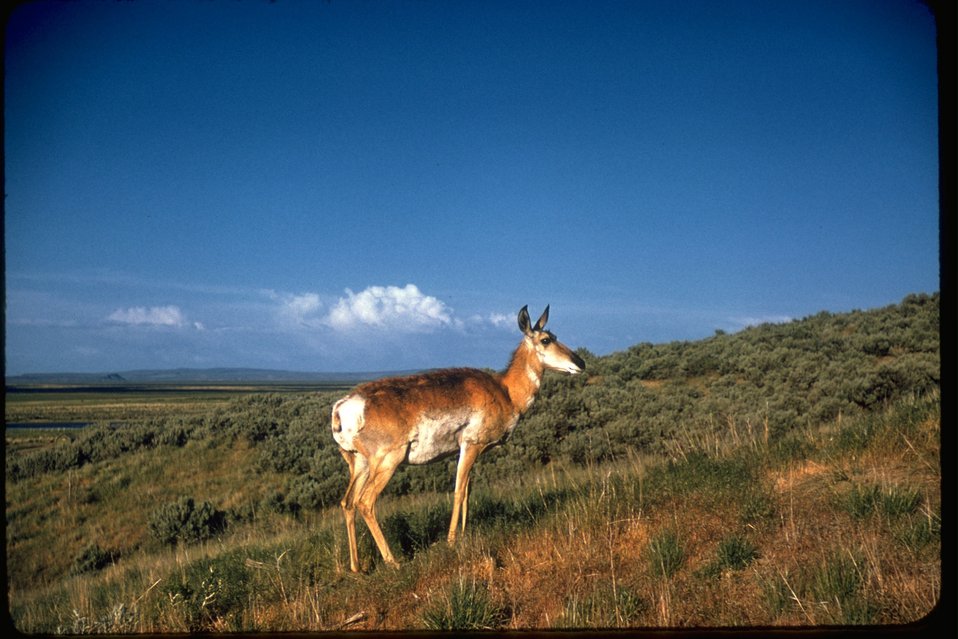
A lone Prong horn (sometimes called Pronghorn Antelope) standing in field.